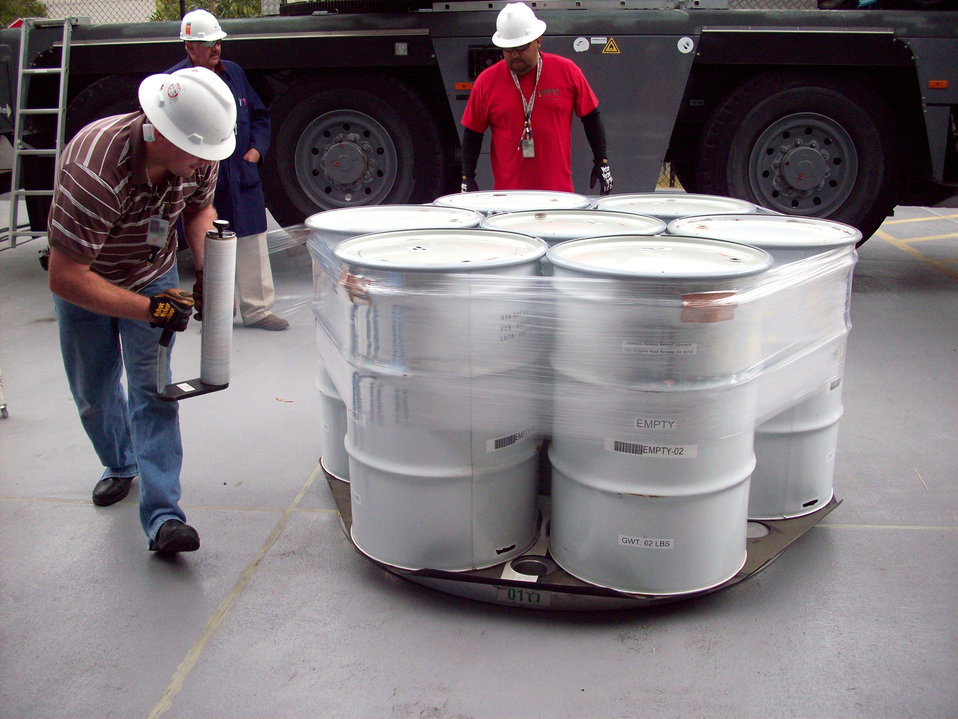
DOE Completes Cleanup of Transuranic Waste at Berkeley Lab

Operators prepare drums of contact-handled transuranic waste for loading into transportation containers.

DOE recently completed cleanup of legacy transuranic waste at the Lawrence Berkeley National Laboratory (LBNL).
A byproduct of the nation’s nuclear defense program, transuranic waste is safely and permanently disposed in rooms mined out of an ancient salt formation more than 2,100 feet below the surface at DOE’s Waste Isolation Pilot Plant (WIPP) in New Mexico.